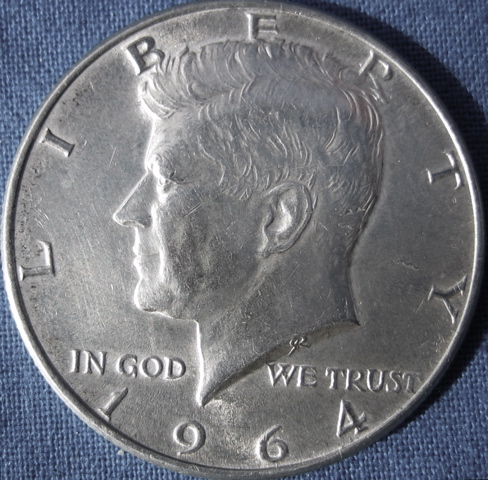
1-2 D.Kennedy